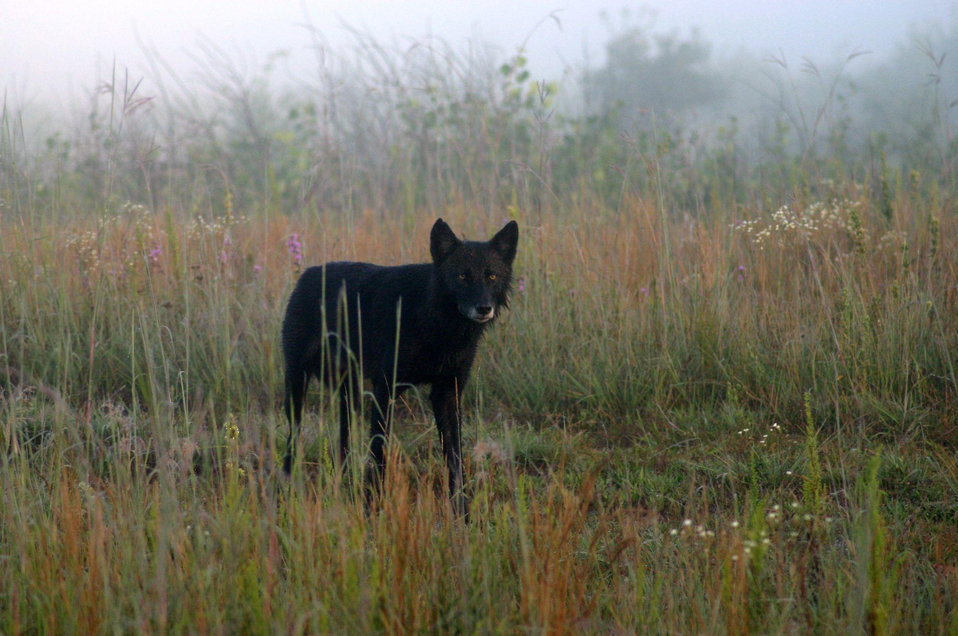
timber wolves

This timber wolf was one of a pair seen near the visitor center at Necedah National Wildlife Refuge on Jan. 12, 2012